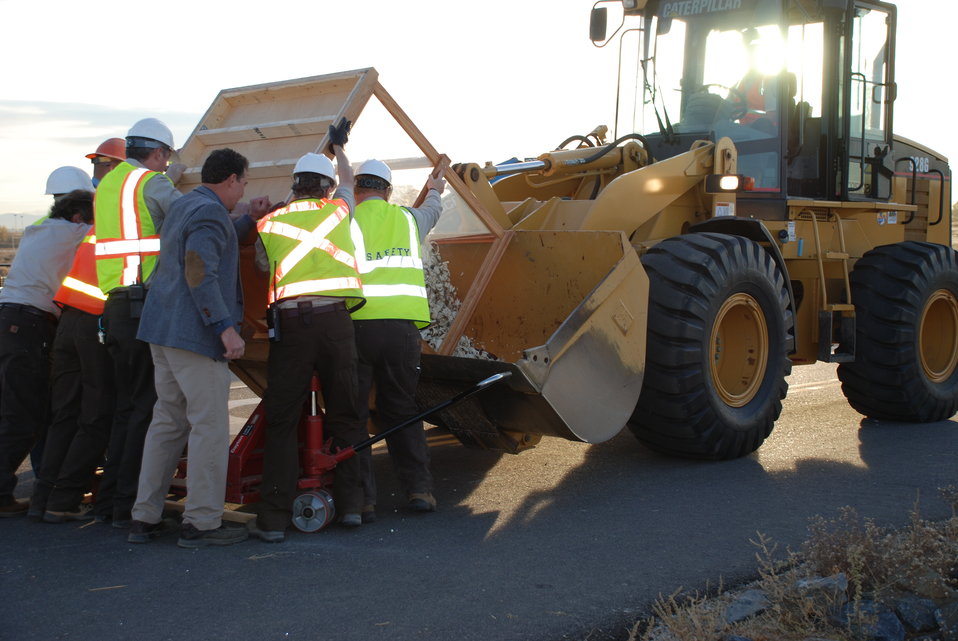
Ivory Crush 2013